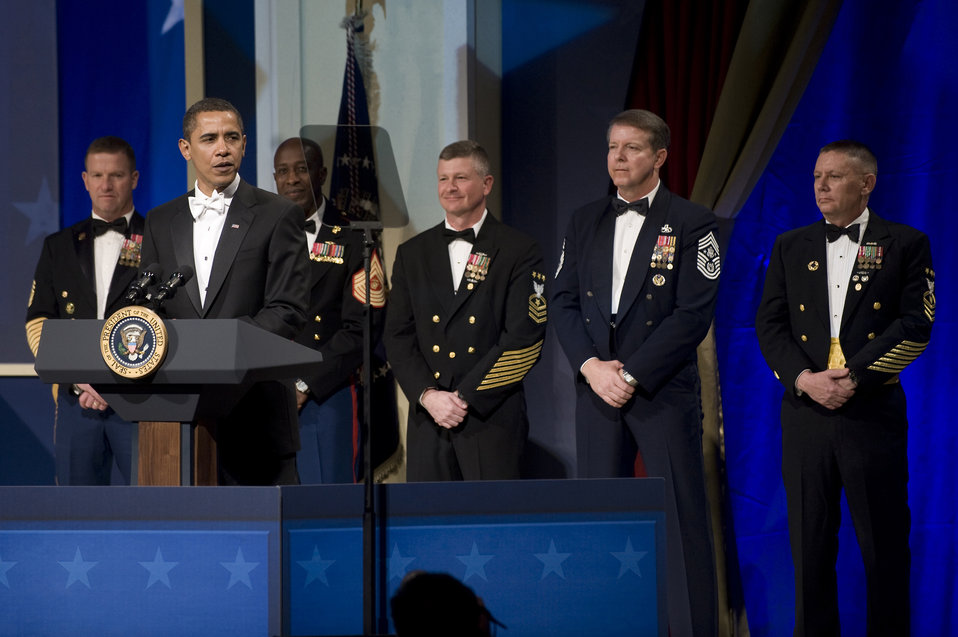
Honoring all services

Surrounded by the senior enlisted adviser of each Service, President Barack Obama addresses the audience Jan. 20 at the Commander in Chief's Ball in Washington, D.C.